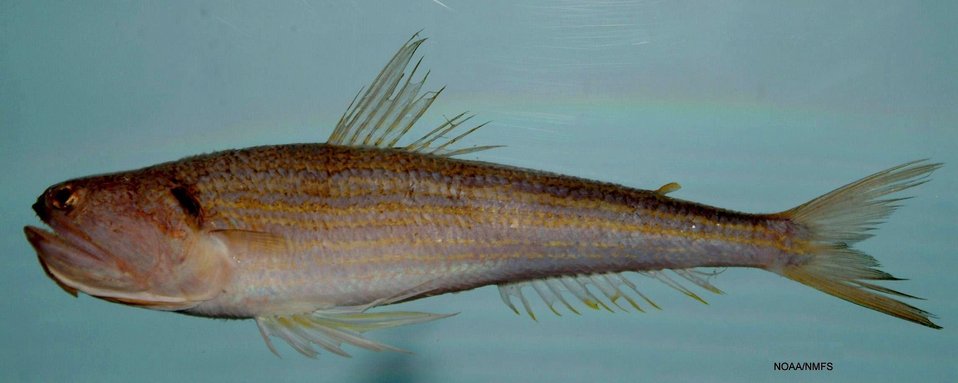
Snakefish ( Trachinocephalus myops )